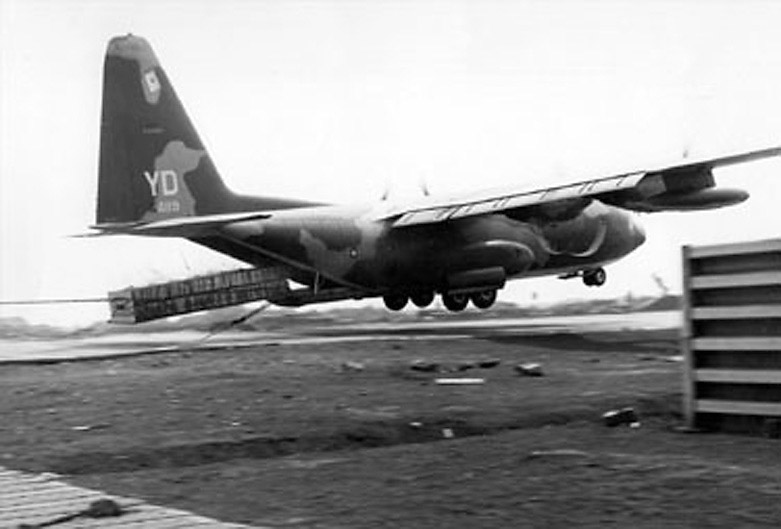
C-130 unit gets a new bird with an old history

In Vietnam in 1968, C-130 Hercules aircraft resupplied the besieged Marine garrison at Khe Sanh. Exposed to enemy fire, C-130s often flew in low to drop pallets of desperately needed supplies, as seen here.